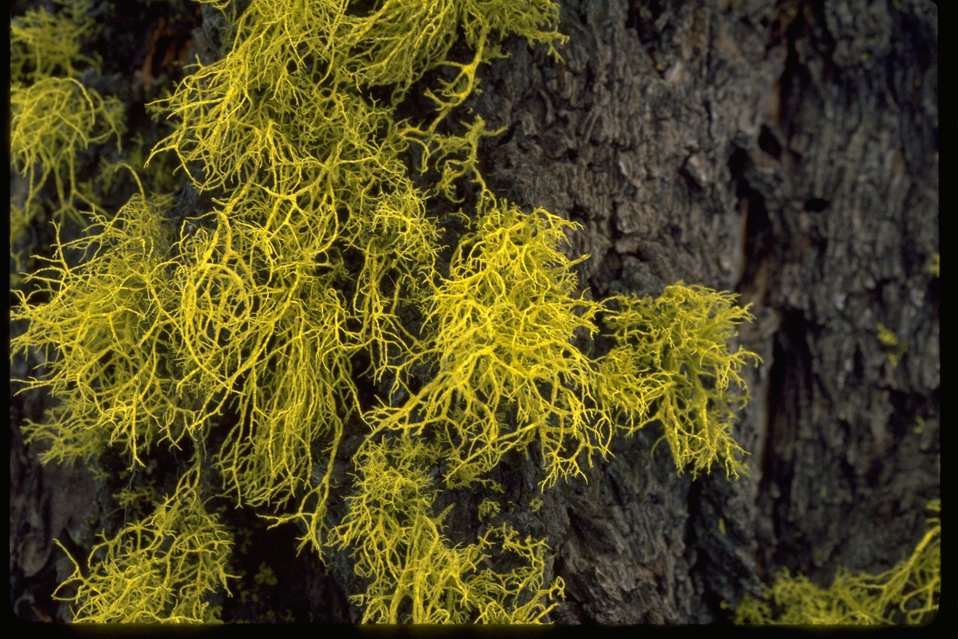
Vegetation in Hobart Pasture on Soda Mountain.